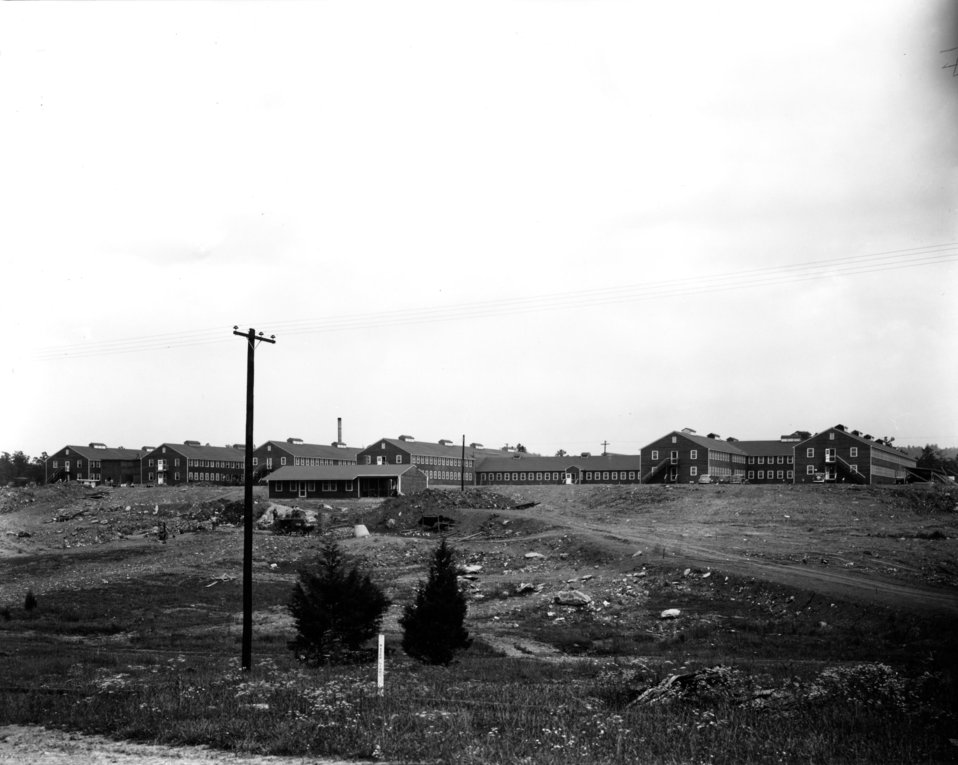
Construction activity at Oak Ridge